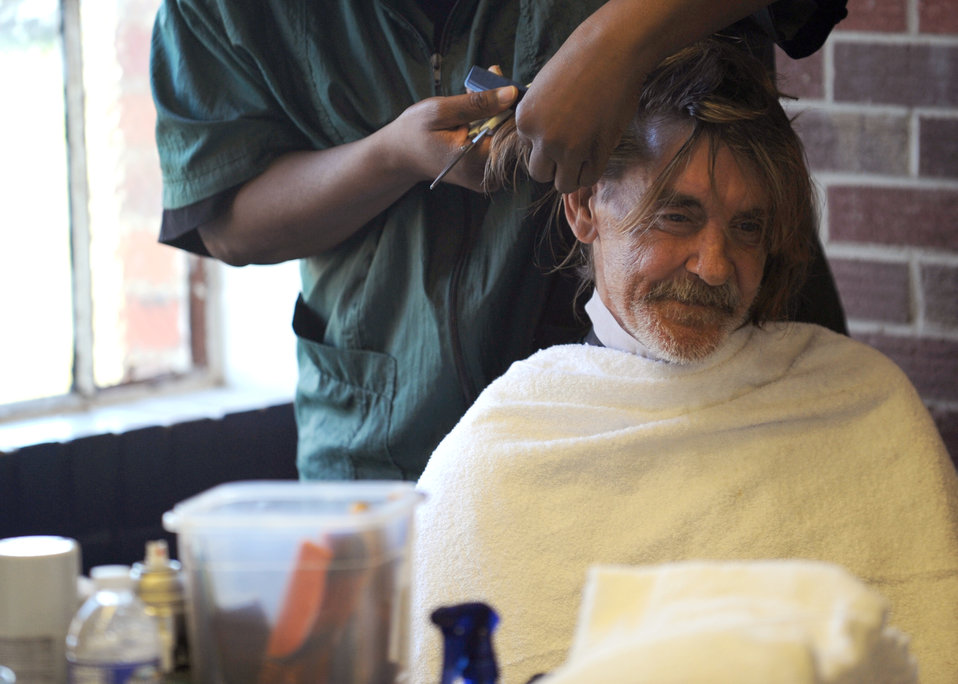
Local 'Stand down' serves homeless veterans

Tony Skinner gets his hair trimmed by a volunteer barber at the 11th annual Stand Down Against Homelessness Oct. 29, 2010, at North Charleston Armory Park, S.C. More than 2,068 homeless veterans and civilians received services like haircuts to help get them back on their feet and raise morale in the process. Mr. Skinner is an Army veteran.